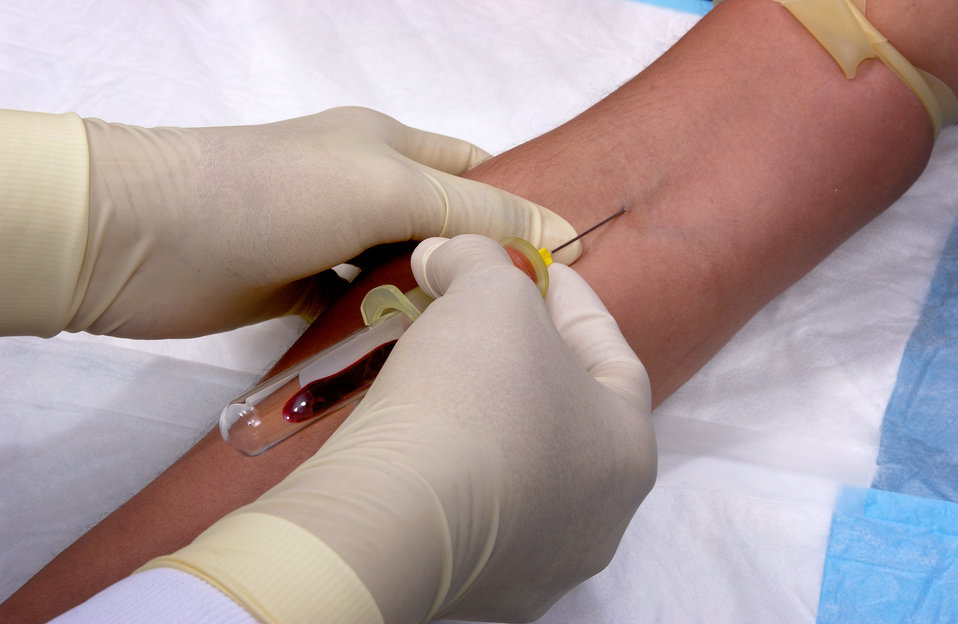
This image depicts a trained phlebotomist, i.e., a technician skilled in the practice of drawing blood from a patient, who was performing a percutaneous antecubital venipuncture into this patient's right antecubital vein. This image is the eleventh in a series of 19 images outlining the steps involved in extracting blood during the venipuncture process.